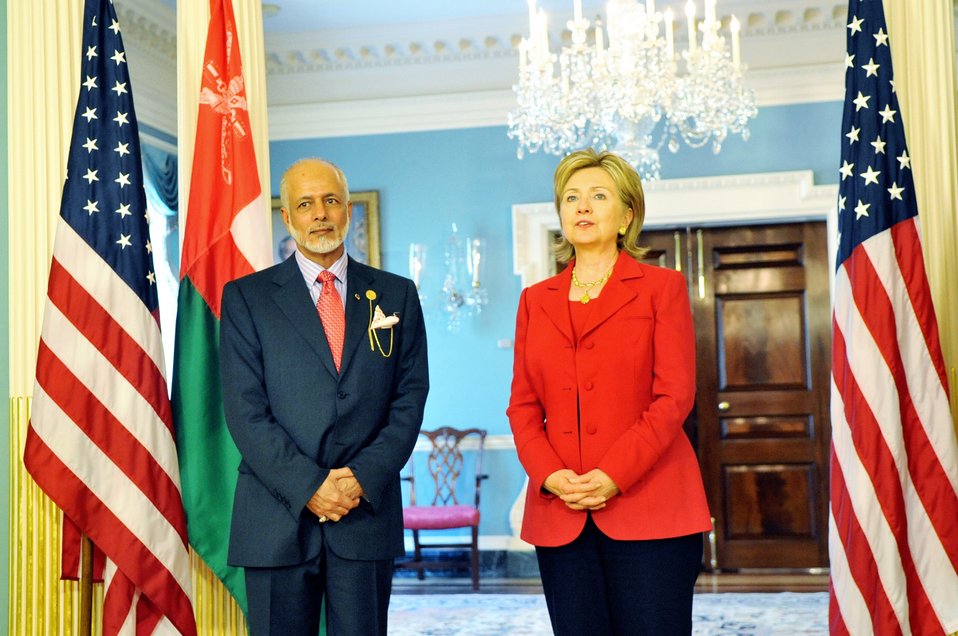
Secretary Clinton Meets Omani Foreign Minister

U.S. Secretary of State Hillary Rodham Clinton and Omani Minister Responsible for Foreign Affairs Yusuf bin Alawi bin Abdullah after their meeting in Washington, DC April 21, 2009.